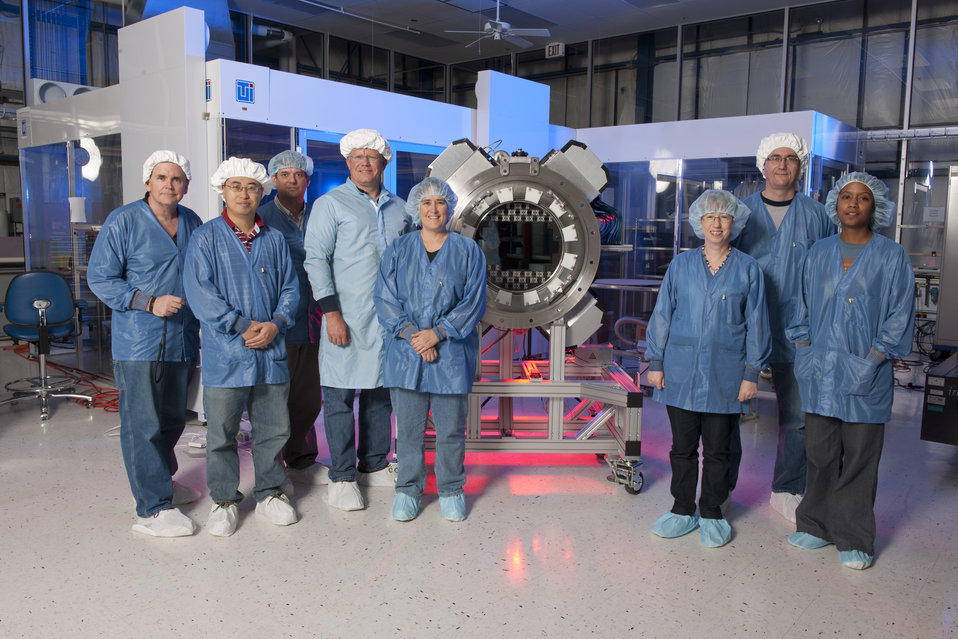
Fermi National Accelerator Laboratory researchers stand beside the 570-megapixel, five-ton Dark Energy Camera,- capable to measuring the expansion of the universe and developing better models about how dark energy works.